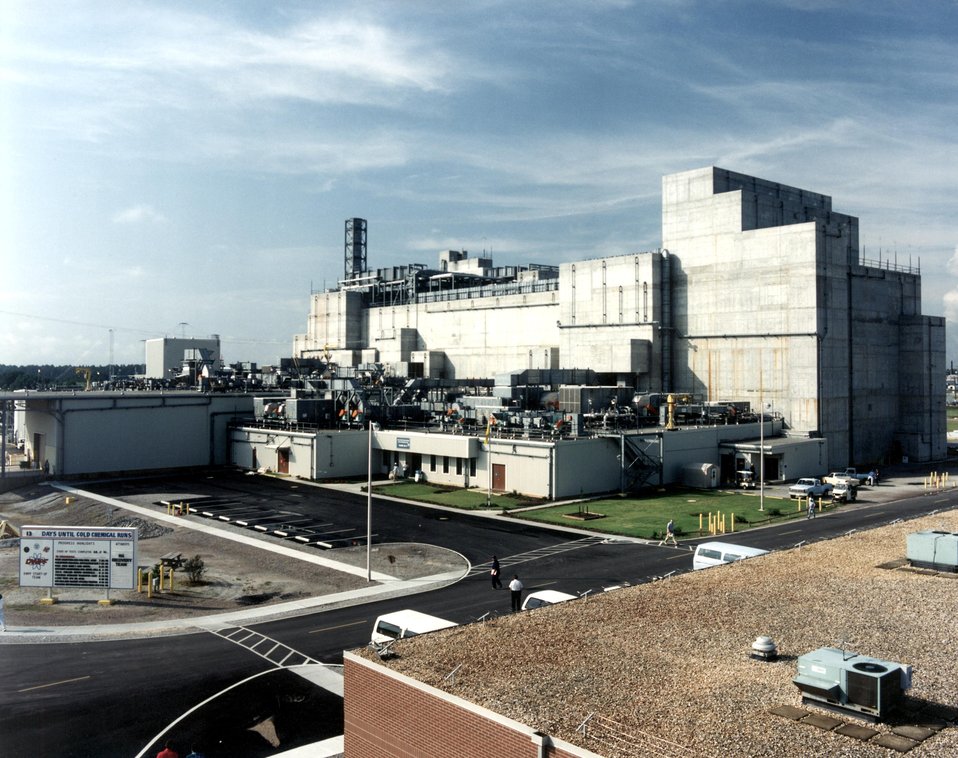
THE DEFENSE WASTE PROCESSING FACILITY AT THE SAVANNAH RIVER SITE, SOUTH CAROLINA.

ON MARCH 12, 1996 THE DWPF OFFICIALLY STARTED PROCESSING NUCLEAR WASTE. LIQUID HIGH-LEVEL RADIOACTIVE WASTE IS IMMOBILIZED IN GLASS FOR ENVIRONMENTALLY SAFE, LONG-TERM STORAGE. SAND-LIKE BOROSILICATE GLASS, CALLED 'FRIT' IS MIXED WITH THE WASTE AND SENT TO A 65 TON STEEL AND CERAMIC MELTER, WHERE THE MIXTURE IS HEATED TO NEARLY 2100 DEGREES F UNTIL MOLTEN. THE MOLTEN GLASS-WASTE MIXTURE IS POURED, IN A PENCIL THIN STREAM INTO STAINLESS STEEL CANISTERS TO COOL AND HARDEN.